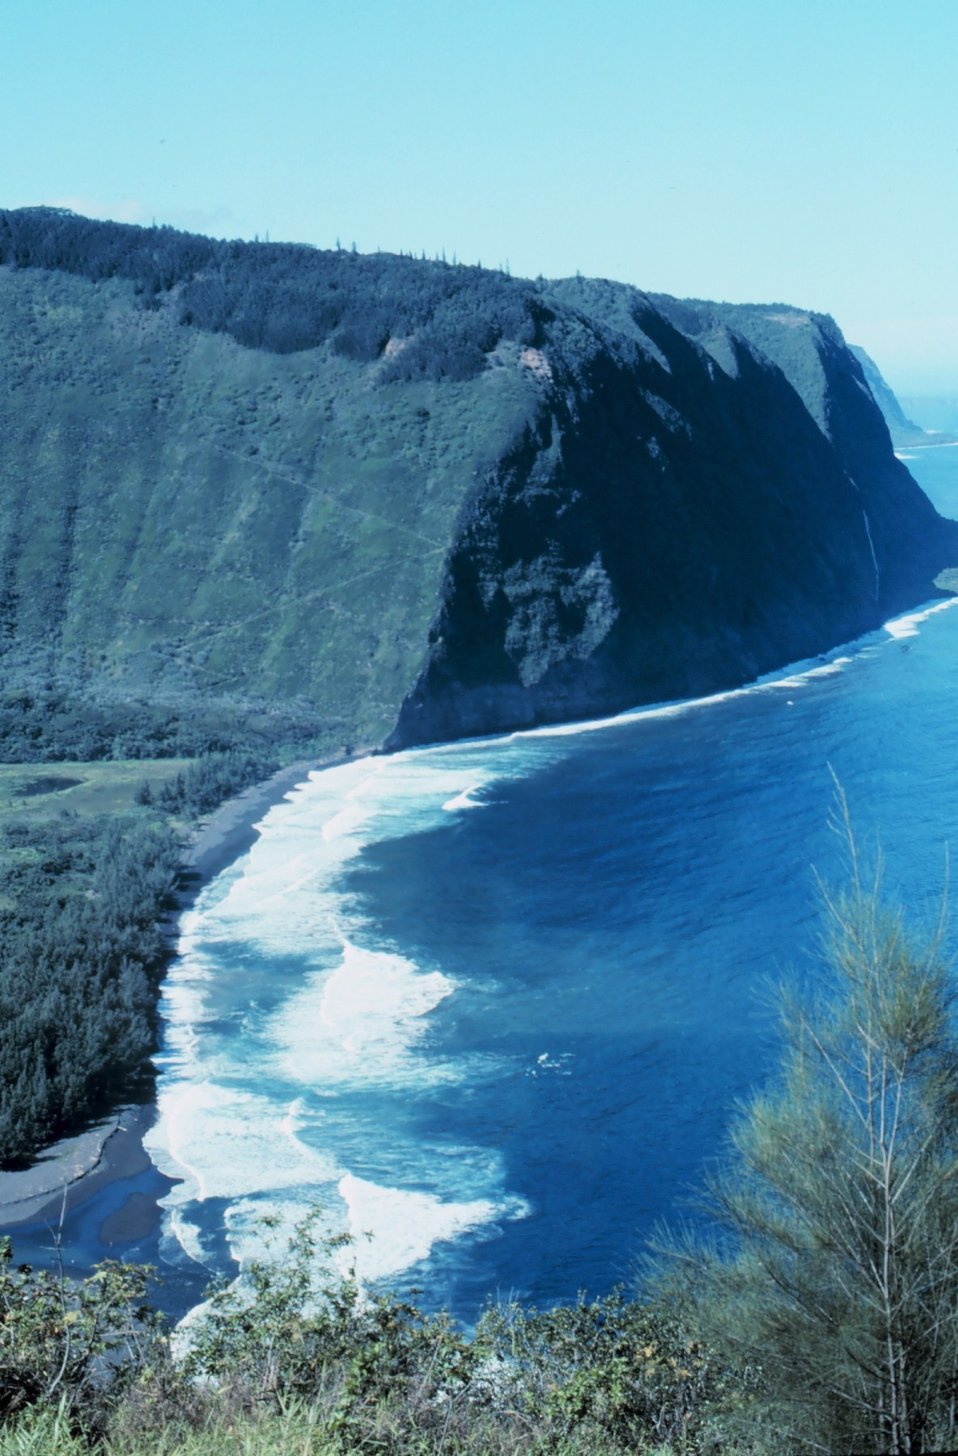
Looking northwest across the Waipio Valley to the Kohala Mountains On the northwest tip of Hawaii.